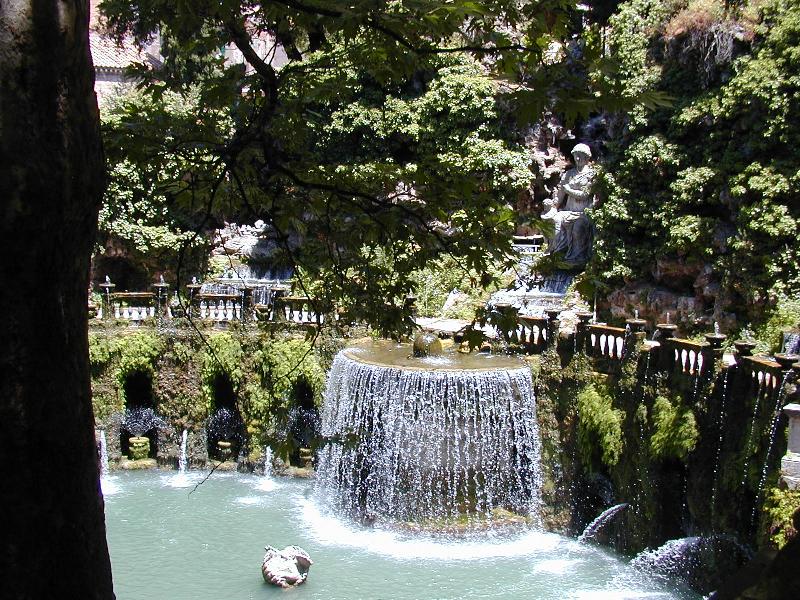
Italiano: Tivoli, Villa d'Este - fontana dell'Ovato